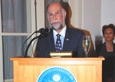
July 4th Celebration at U.S. Interest Section in Cuba

United States Interest Section Havana Chief of Mission Jonathan Farrar welcomes a guest to the U.S. Independence Day reception in Havana, Cuba, on July 2, 2010.